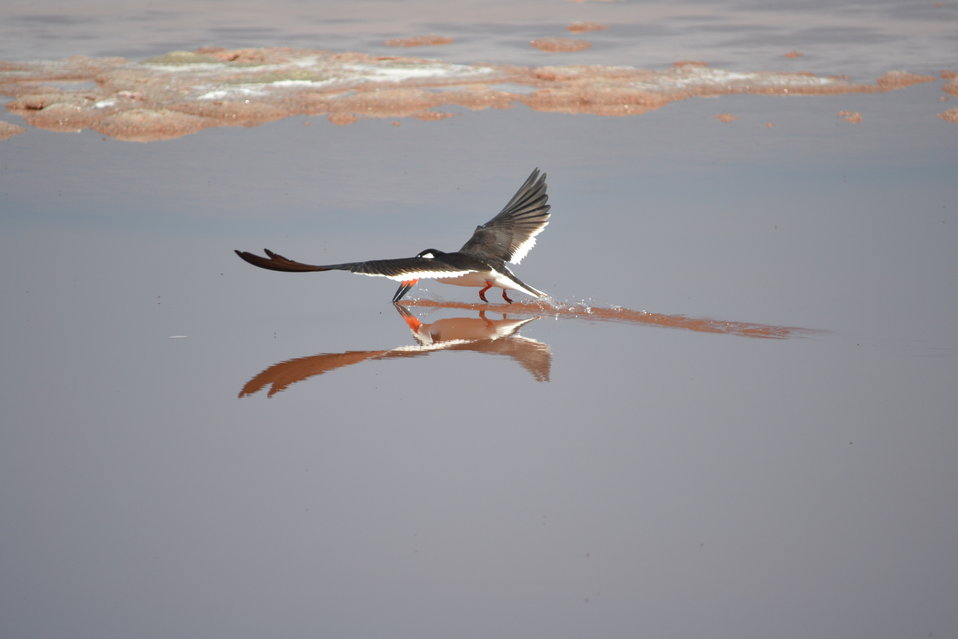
Black skimmer (Rynchops niger) gracefully glides for fun!